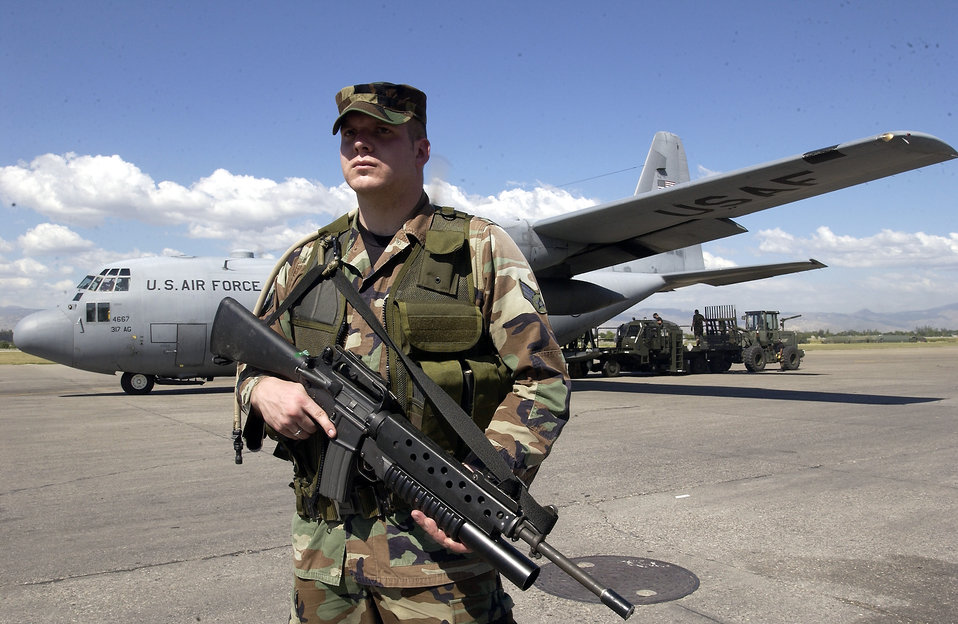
Helping Haiti

PORT-AU-PRINCE, Haiti -- Senior Airman Rick Montonario secures the ramp here as a C-130 Hercules from Dyess Air Force Base, Texas, is being unloaded March 3. Airman Montonario is assigned to the 437th Security Forces Squadron at Charleston AFB, S.C.